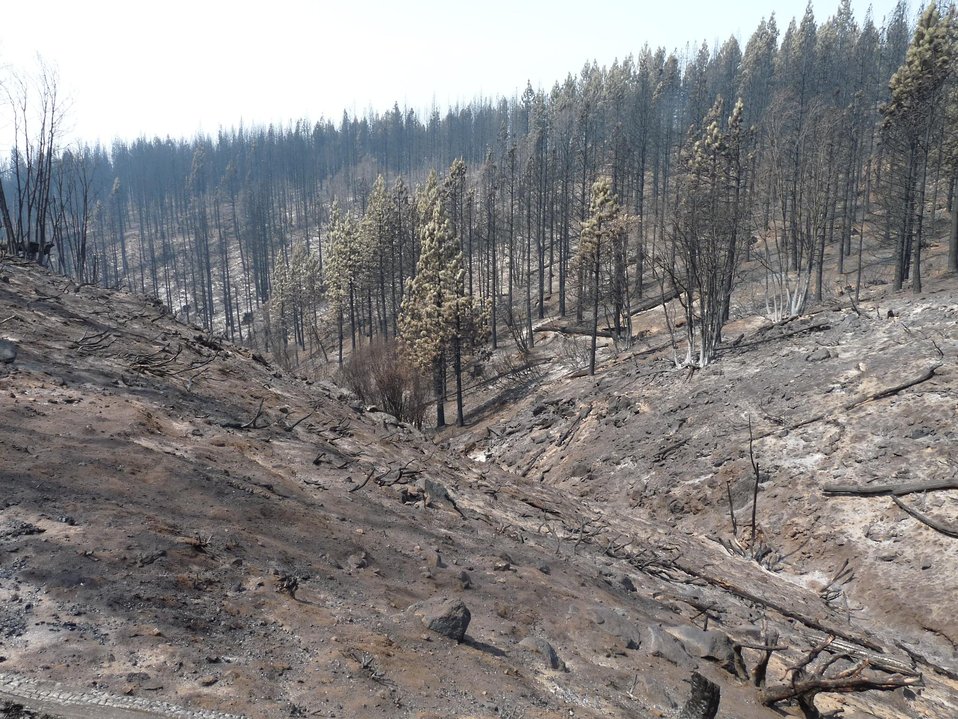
Jawbone Creek eastern tributary below Boggy Meadow shows damage from the Rim Fire. BAER is a rapid assessment of burned watersheds by a BAER team to identify imminent post-wildfire threats to human life and safety property and critical natural or cultural resources on National Forest System lands and take immediate actions to implement emergency stabilization measures before the first major storms. Fires result in loss of vegetation exposure of soil to erosion and increased water runoff that may lead to flooding increased sediment debris flows and damage to critical natural and cultural resources. BAER team members implement seeding and mulching installation to prevent erosion, erect temporary water run-off control structures that will protect recovering areas, and installation of warning signs, replace safety related facilities, remove safety hazards, prevent permanent loss of habitat for threatened and endangered species, and prevent the spread of noxious weeds and protect critical cultural resources. The Rim Fire in the Stanislaus National Forest near in California began on Aug. 17, 2013 and is under investigation. The fire has consumed approximately 256,169 acres and is 84% contained.